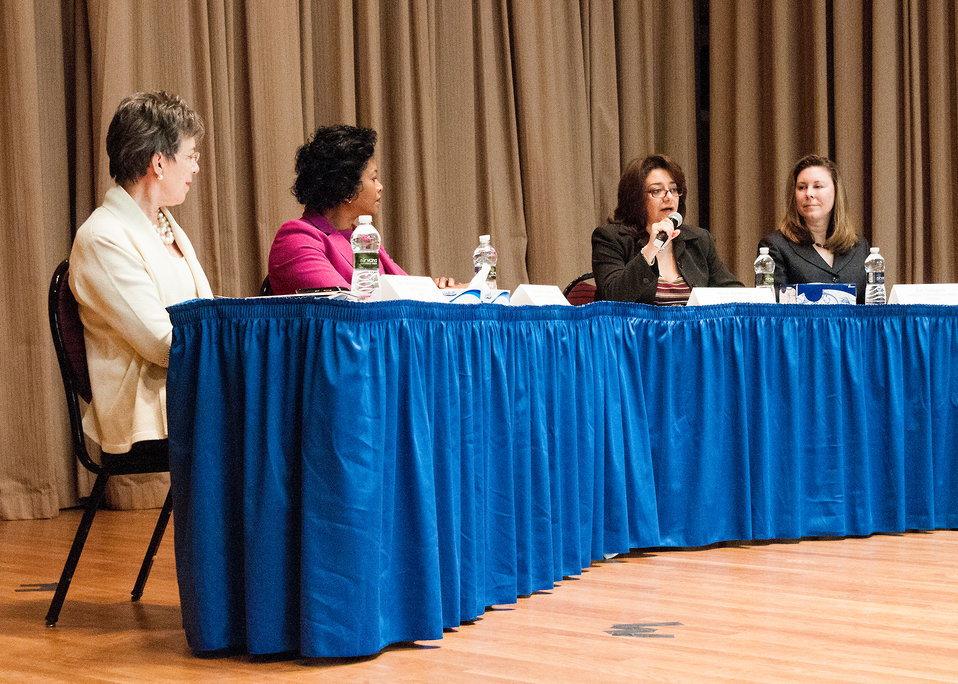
(L to R) Agriculture Under Secretary, Research, Education and Economics (REE) Dr. Katherine Wotecki, U.S. Department of Agriculture (USDA) Associate Chief Information Officer (Technology) Ms. Yvonne Jackson, USDA Rural Development (RD) Rural Utilities Service (Engineering) Assistant Administrator Ms. Nivin Elgohary, and USDA Associate Chief Financial Officer (Mathematics) Ms. Kim Farington chair a panel during the USDA ‘s Office of the Chief Information Officer (OCIO) National Women’s History Month celebration at the USDA Jefferson Auditorium in Washington, D.C. on Thursday, Mar. 14, 2013. The theme of this year’s celebration is, “Recognizing American Women’s Outstanding Contributions to the Field of Science, Technology, Engineering and Mathematics,” commonly referred to as STEM.